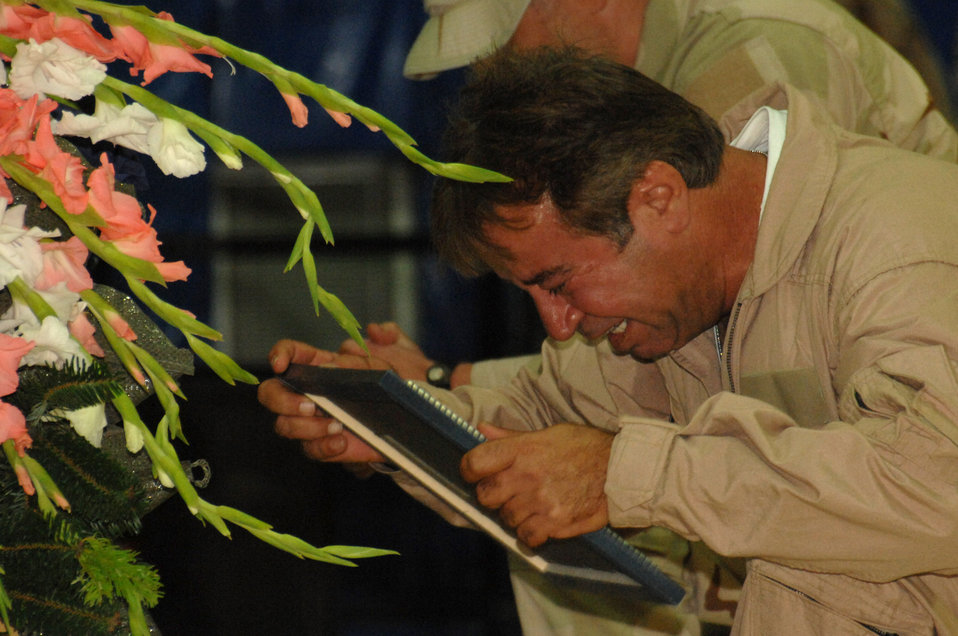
Final tributes paid to Airmen killed in Iraq

An interpreter for Air Force Office of Special Investigations Expeditionary Detachment 2410 grieves during a memorial ceremony June 8 honoring Special Agents Tech. Sgt. Ryan Balmer and Staff Sgt. Matthew Kuglics at Kirkuk Regional Air Base, Iraq. The agents were killed in action June 5 while supporting Operation Iraqi Freedom.